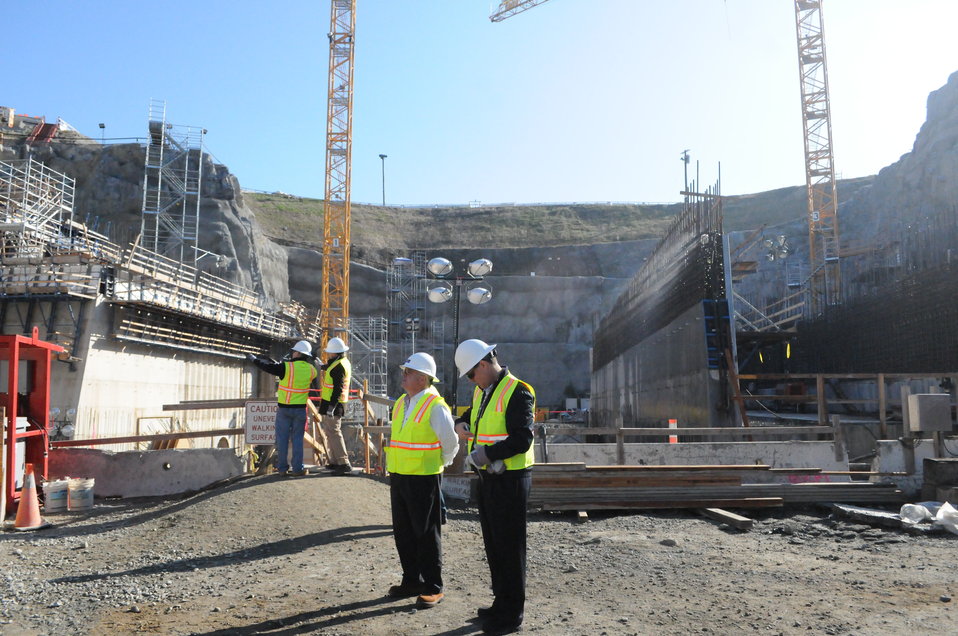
Phase IV Contractors Visit Construction Site

Construction contractors visited the Folsom Dam auxiliary spillway Feb. 3, 2013 to get a final walkthrough of the project before submitting their proposals to work on the fourth phase of the project. Potential contractors walked the site for hours comparing maps and schematics, and observing geological features and granite core samples. Proposals must be submitted before Feb. 25 and contracts are expected to be awarded sometime in May.